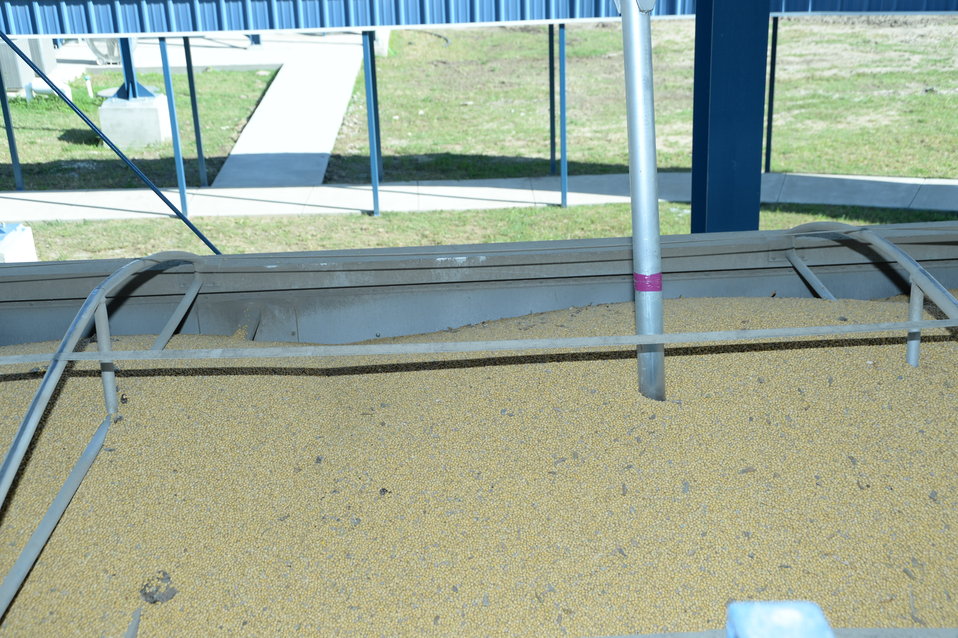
A sample of grain is removed from a barge for testing at the U.S. Department of Agriculture’s (USDA) Grain Inspection, Packers and Stockyards Administration (GIPSA) Federal Grain Inspection Service (FGIS) laboratory in New Orleans, LA on Tuesday, Nov. 19, 2013.